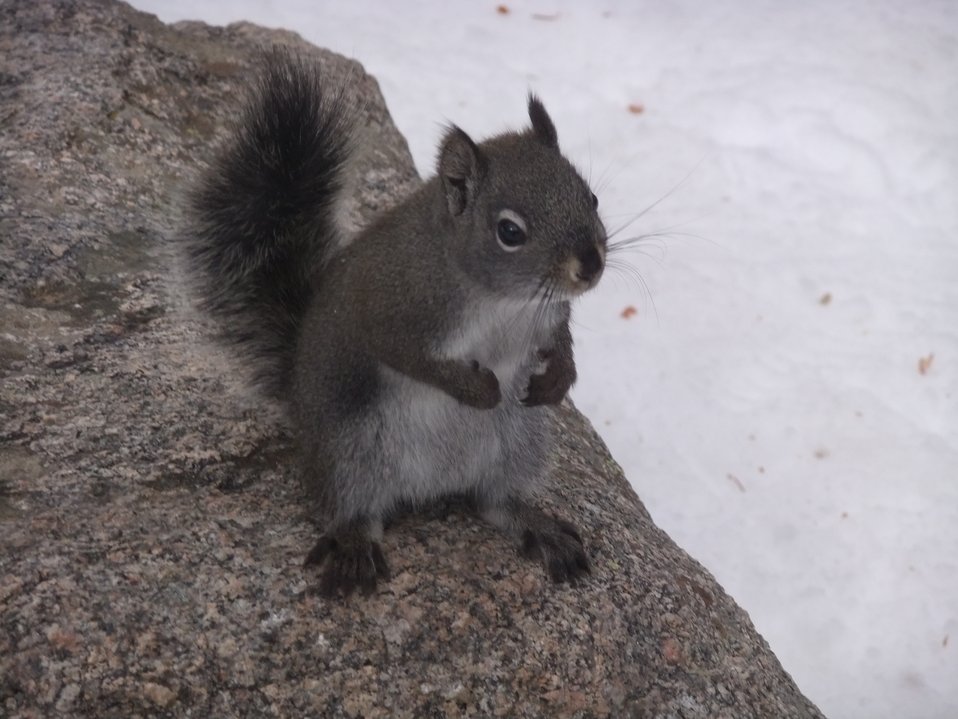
Pine Squirrel

A very curious and photogenic mammal.

Location: Rocky Mountain National Park

Credit: Amanda Horvath / USFWS

Photo Contest Entry #158